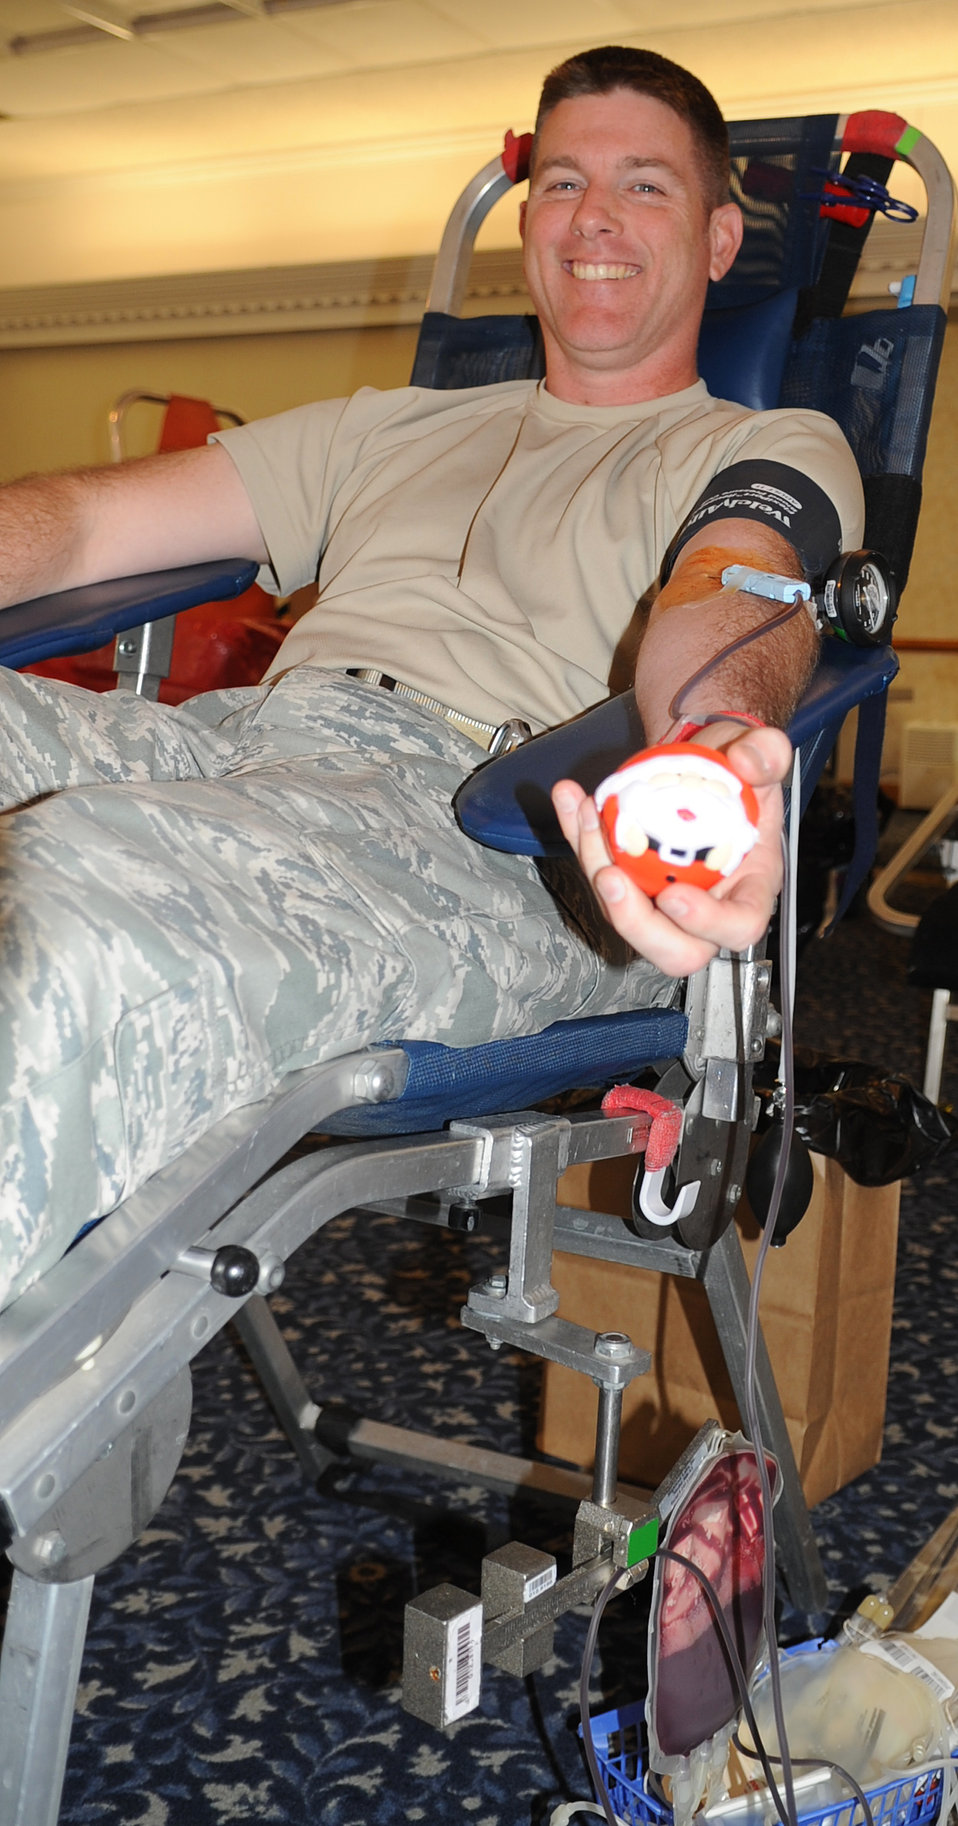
Draining the veins, for a good cause

Tech. Sgt. Robert Scott 4th Equipment Maintenance Squadron aerospace ground equipment technician, donates blood to the American Red Cross at Seymour Johnson Air Force Base, Nov. 10, 2011. One pint of blood will be taken from each donor and supplied to hospitals in need. Roberts hails from New Bern, N.C.